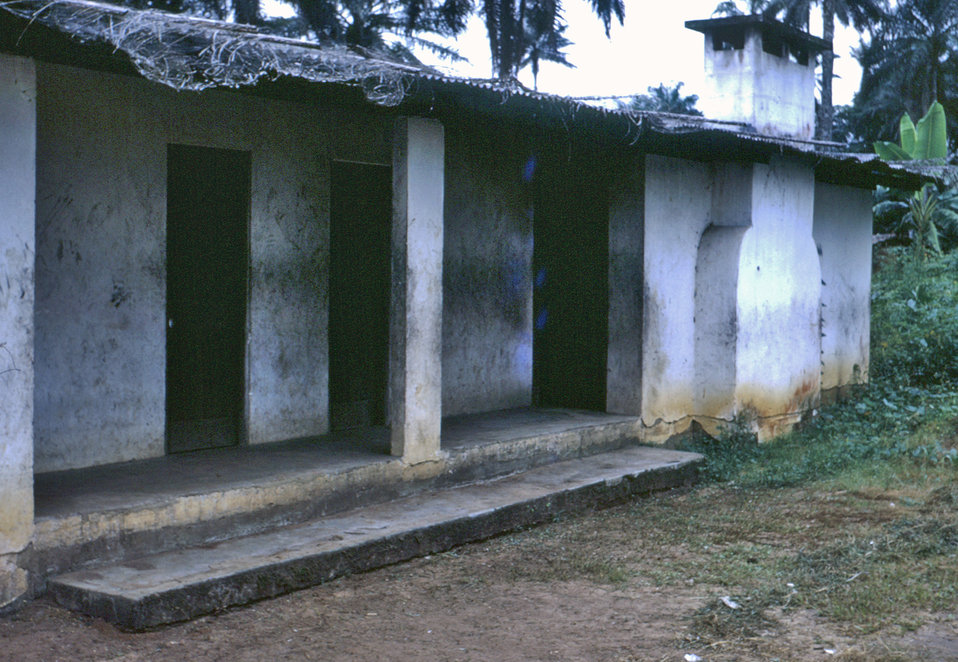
This 1968 photograph was taken outside of the Ikot Ibritim relief camp, which was set up to care for famine stricken refugees during the Nigerian-Biafran civil war of the late 1960s.